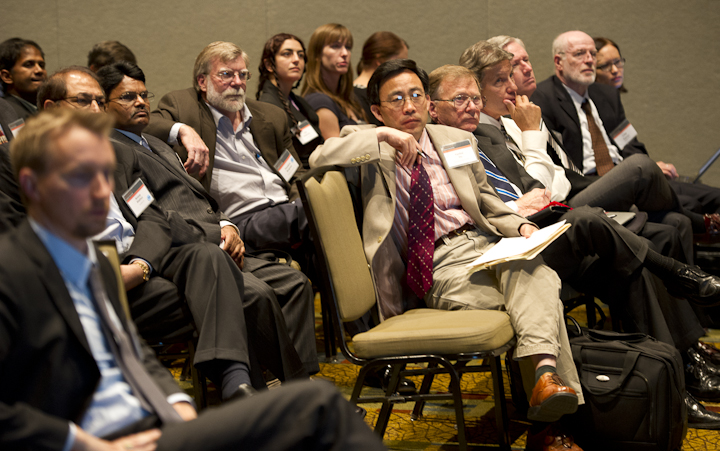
Sunshot Break Out Session